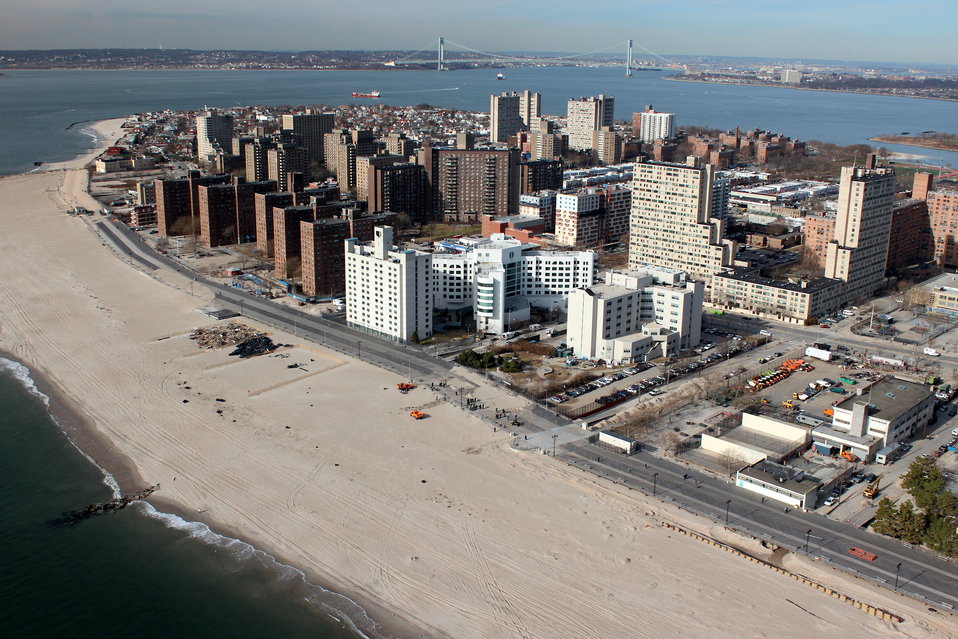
December 6, 2012 Sea Gate, Brooklyn, New York

Damage along the seaside areas of Brooklyn, New York. Sand appears missing in the top left of this photo, while it temporarily took over the road in the foreground. Coney Island is to the right and the Verrazano Bridge is in the background.